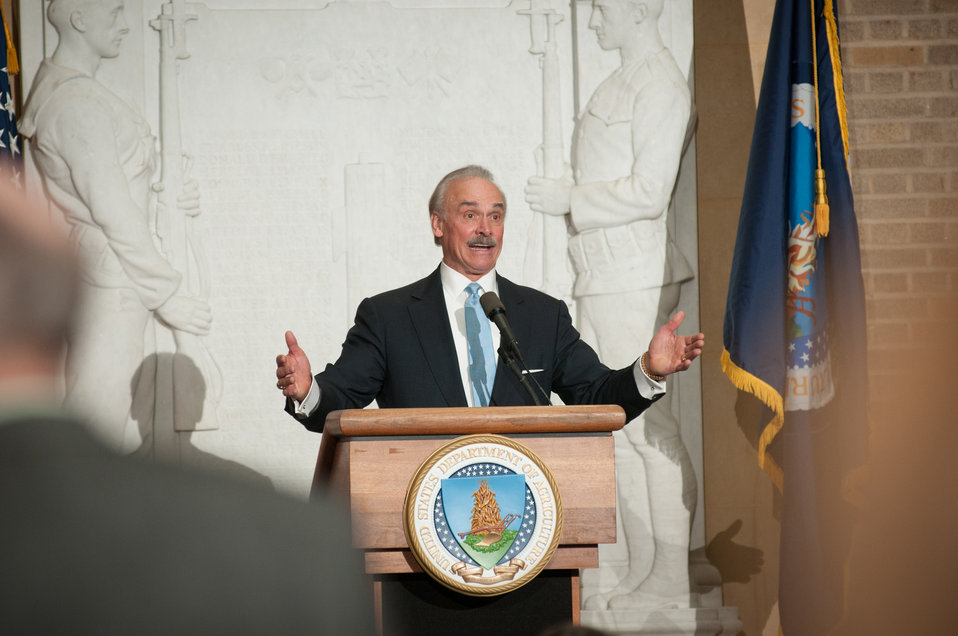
Keynote speaker and former National Football League Pittsburgh Steelers halfback Robert Patrick 'Rocky' Bleier spoke about the importance of milk in his childhood growth, and recounted some of his historic game-winning football play, during a luncheon with dairy producers, Dairy Management, Inc., (DMI) and other stakeholders from the dairy producers industry, at the Whitten Building Patio in Washington, D.C. on Tuesday, Feb. 26, 2013.